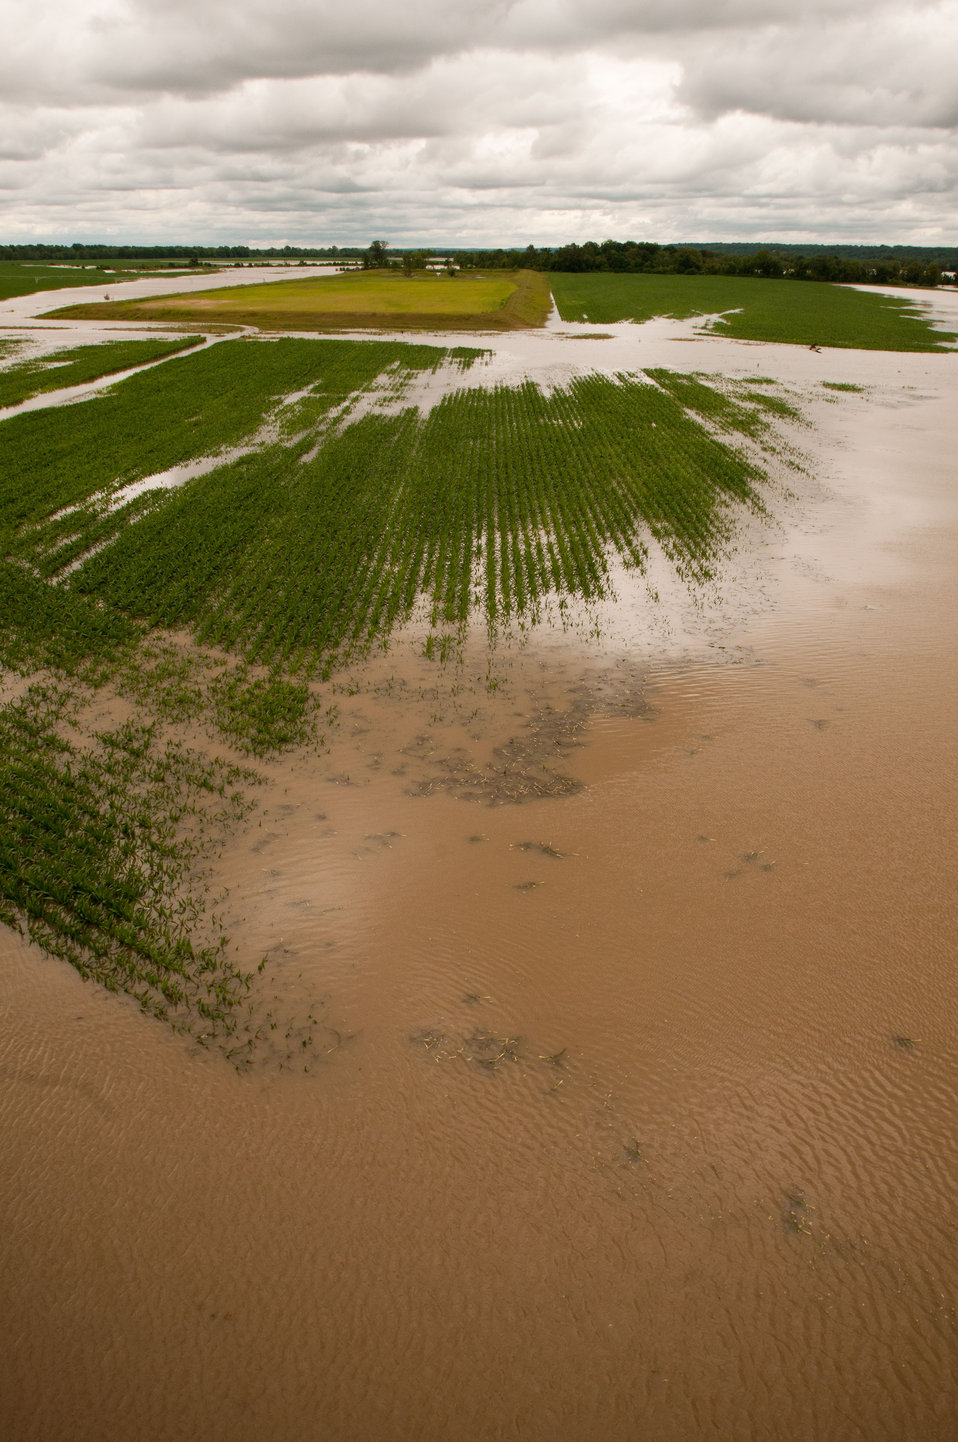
Mississippi River floodwaters have pushed into Yazoo River and into this corn field near Yazoo City, MS on Monday, May 16. 2011. The water saturated soil does not allow enough oxygen to the plant, by the time the water is expected to recede, the stalks will be dead.